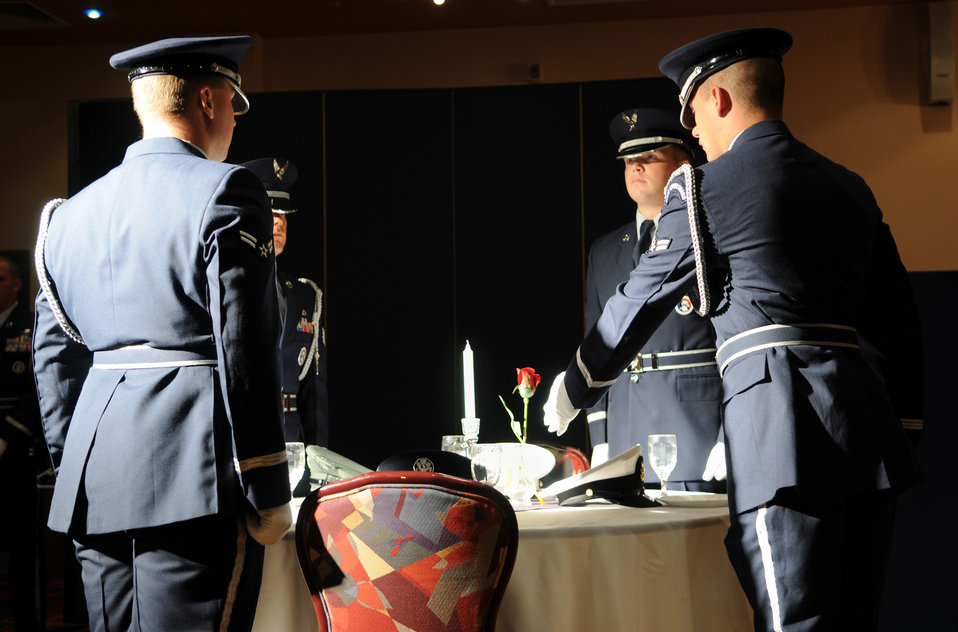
Former RAF POWs share experiences with Mildenhall Airmen

Members of the Royal Air Force Mildenhall honor guard perform the missing man table ceremony at the Prisoner of War/Missing in Action Remembrance Luncheon Sept. 16, 2009, at RAF Mildenhall, England. During the luncheon, two former Royal Air Force airmen, as guest speakers, recounted the events of their capture and detention in Germany during World War II.